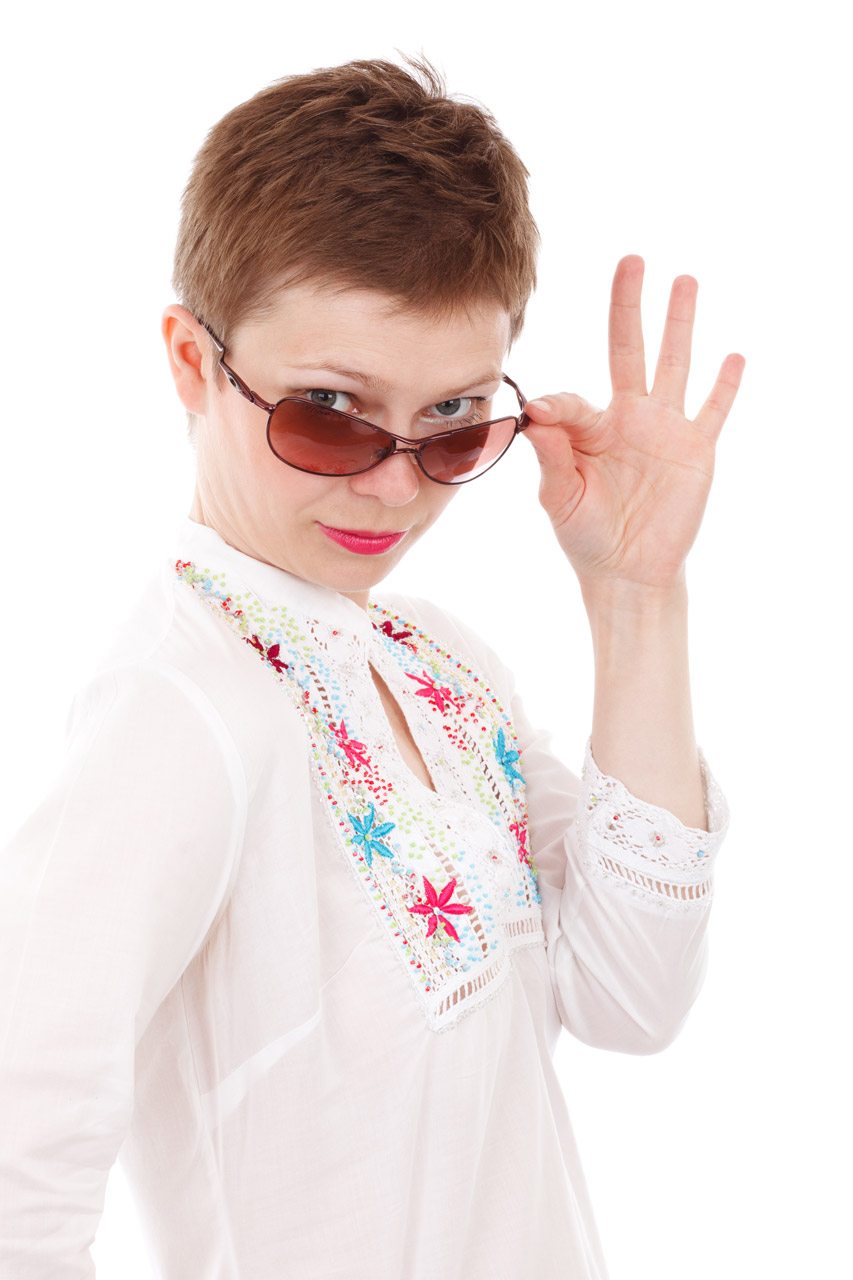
Woman with sunglasses

Young woman looking through sunglasses in summer clothes isolated on white background.